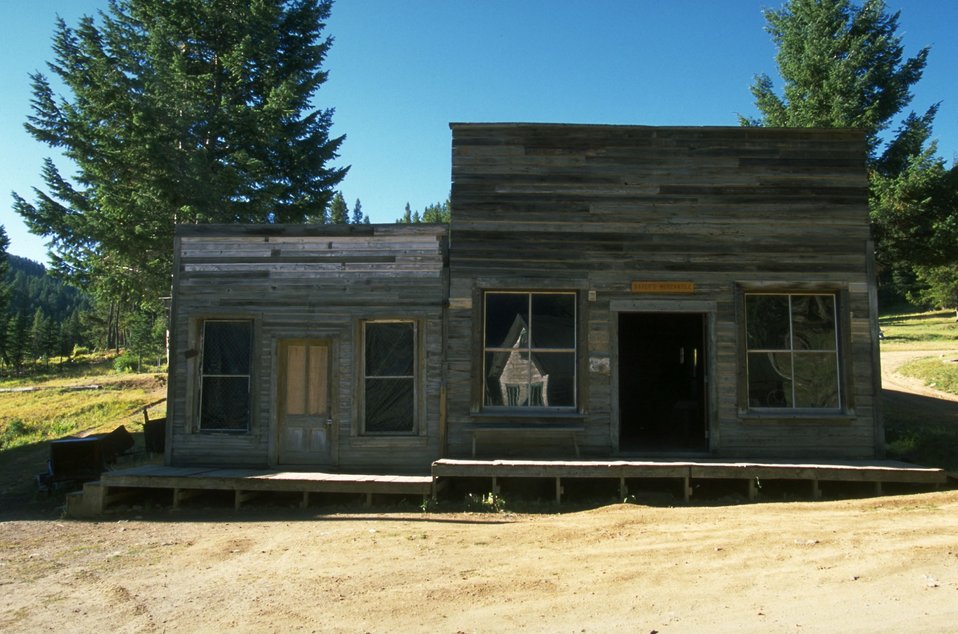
The Dahl Cabin at Garnet Ghost Town